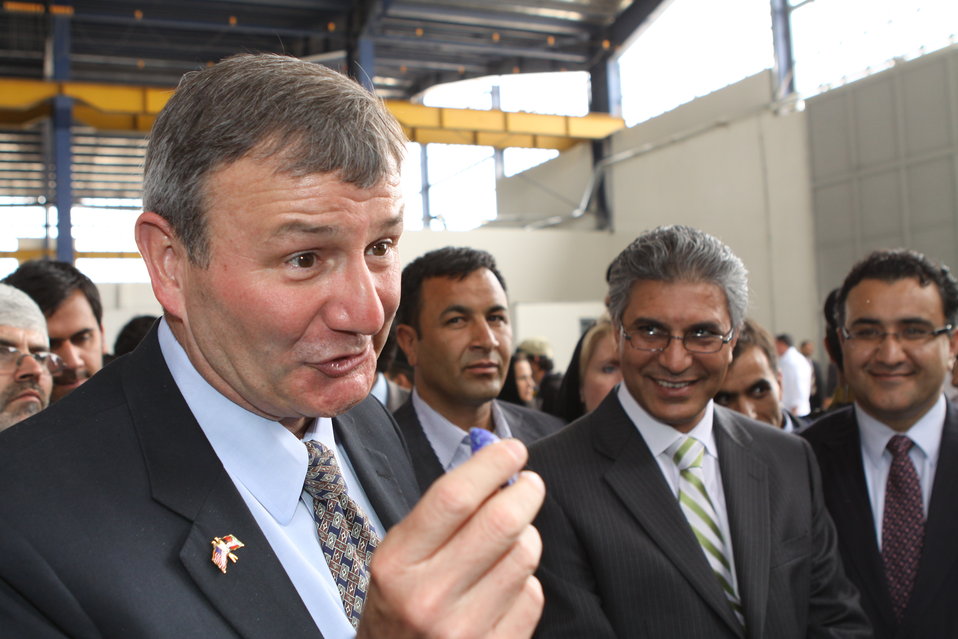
100525 Hirat Marble Conference 504